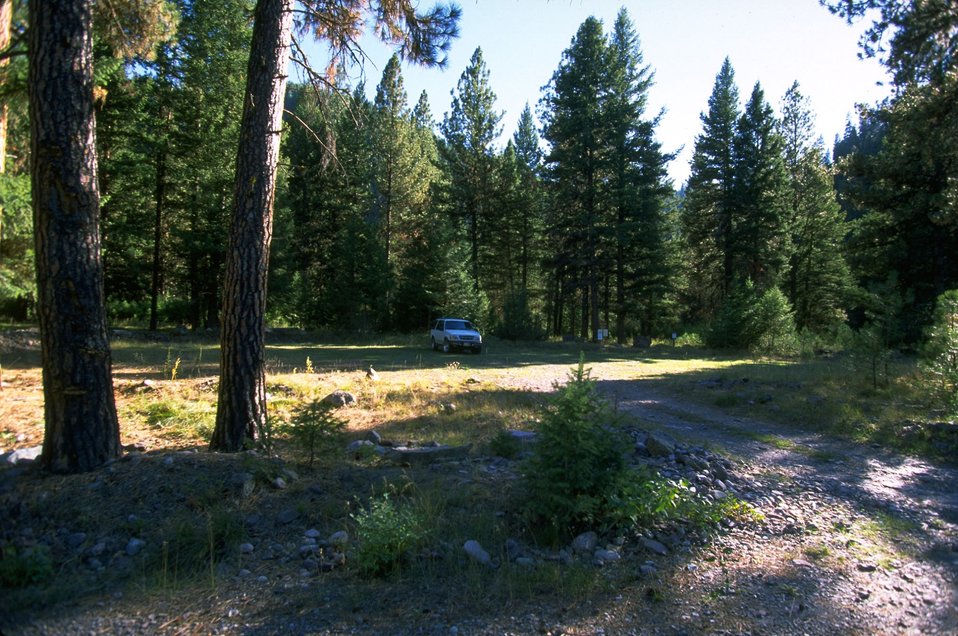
Red Rocks day use area along Blackfoot River